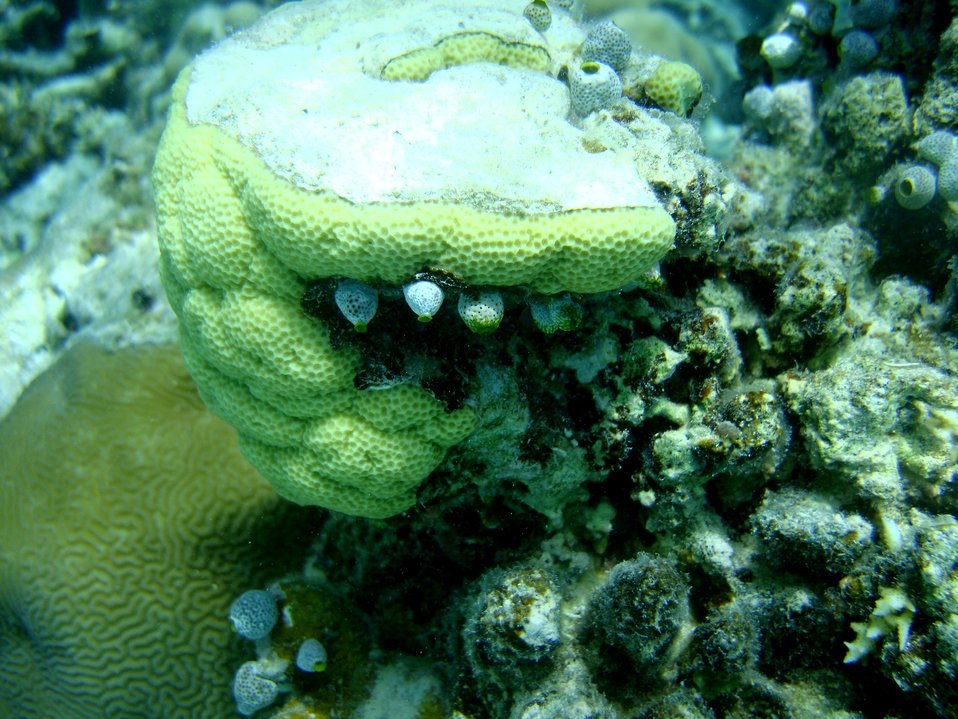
Faviidae coral